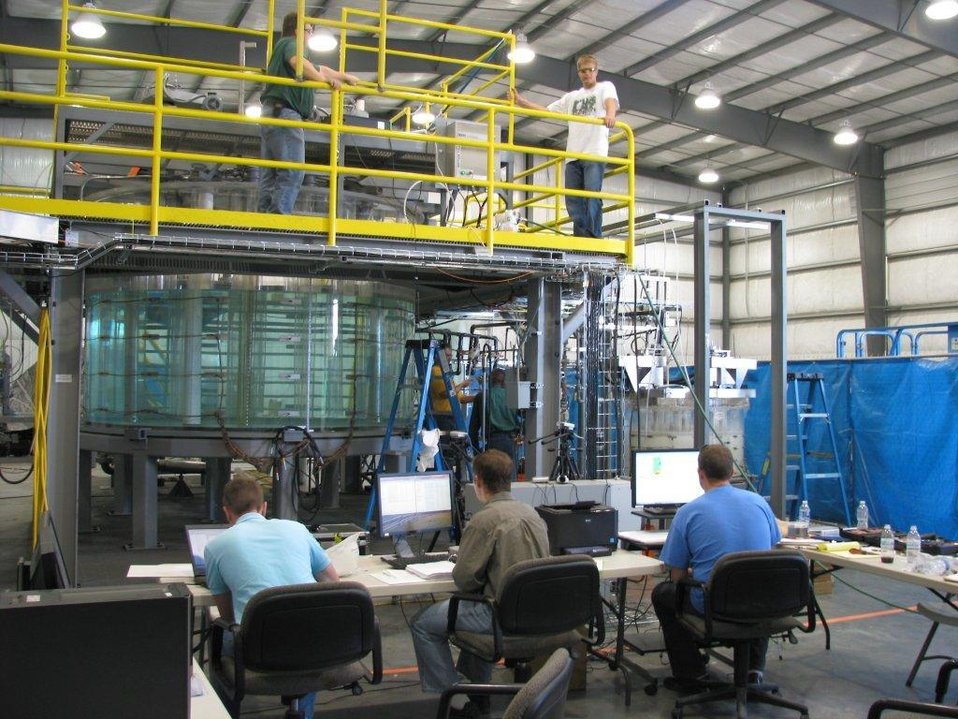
ORP Demonstration Project

A tank waste mixing and sampling demonstration funded by the Recovery Act will help ORP understand how to accurately sample and consistently feed large batches of high-level waste to the Waste Treatment Plant being built at Hanford.